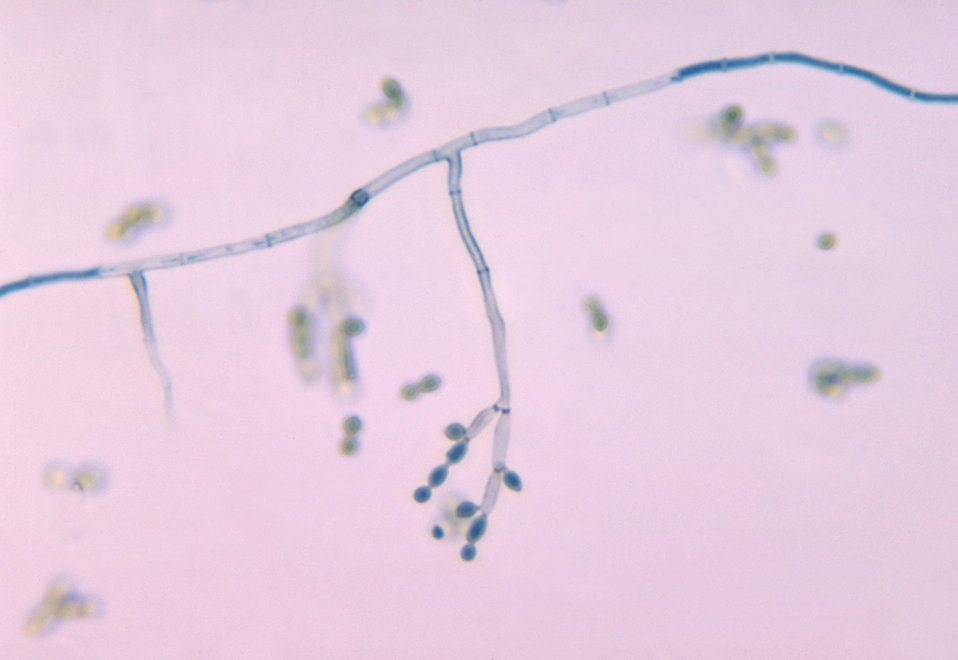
This is a photomicrograph of the fungus Cladosporium spp. using the lactophenol cotton blue staining technique.